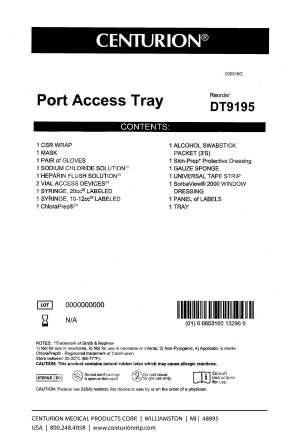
RECALLED - Convenience kits which contain bacteriostatic sodium chloride solution by American Regent

April 1, 2011 - Product Recall - Centurion Medical Products Initiates Voluntary Recall of Customized Convenience Kits (including select Central Venous Catheter, PICC Insertion, and VAD Trays) that contain American Regent’s Bacteriostatic Sodium Chloride Injection, USP, 0.9% 30 mL Multiple Dose Vials.